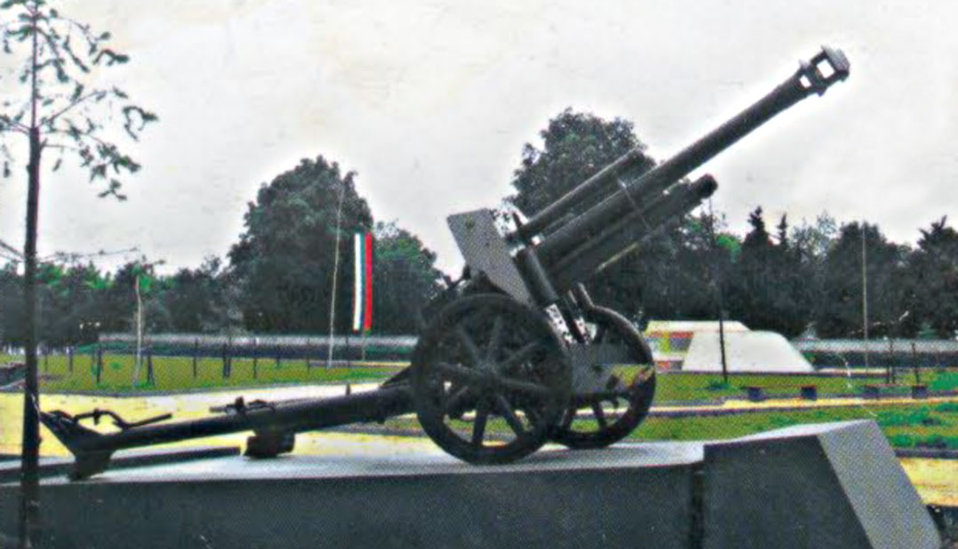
105mm en:Howitzer used in the en:Battle of Turtucaia